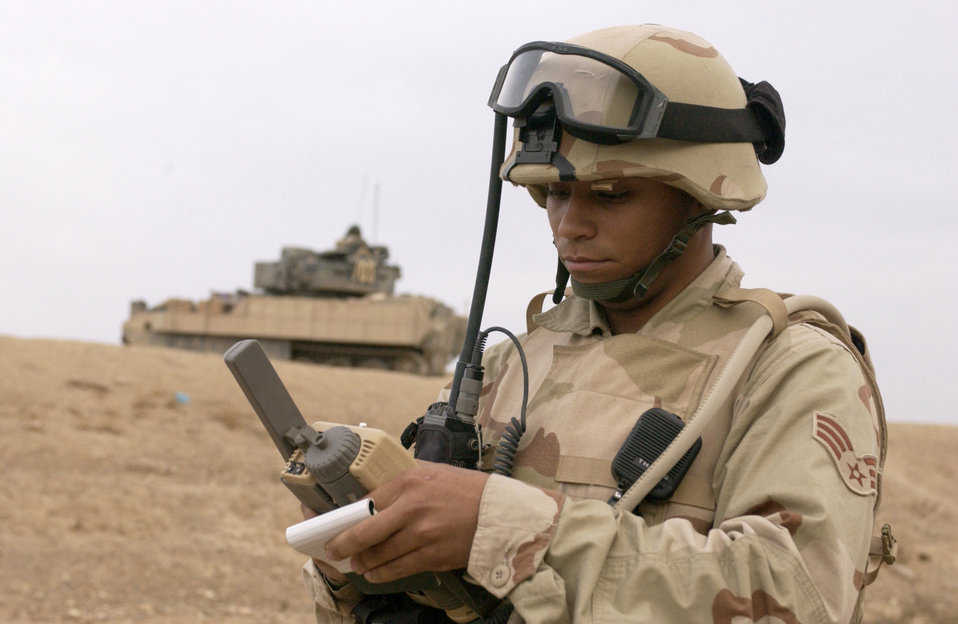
Ready for an air strike

AD DWR, Iraq -- Senior Airman Ricky Williams acquires global positioning systems coordinates for an air strike mission here recently. Airman Williams is assigned a tactical air control party member from Detachment 1, 2nd Air Support Operations Squadron, attached to the 1st Infantry Division.